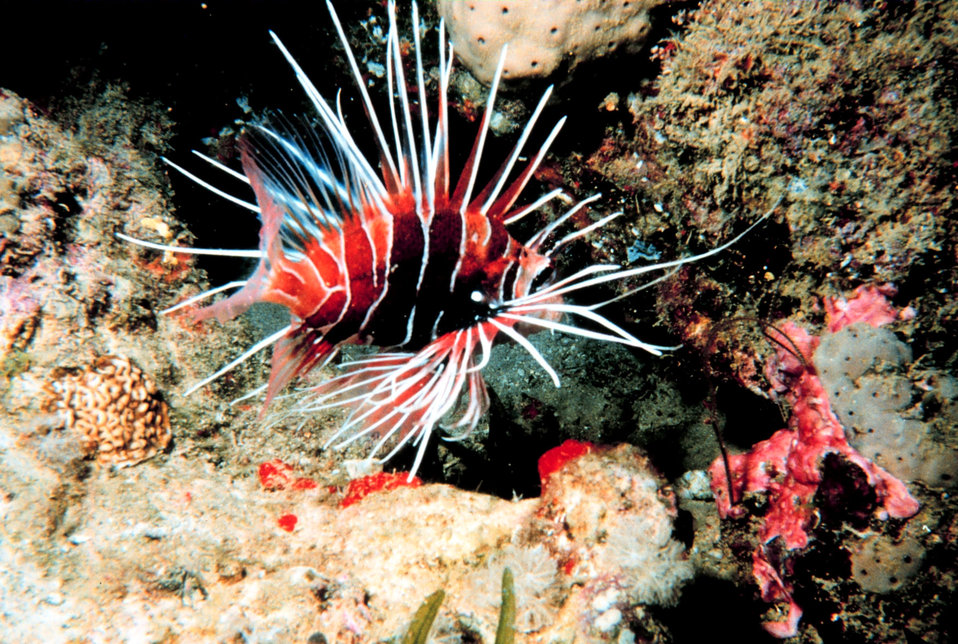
Radiata lion - Pterois radiata